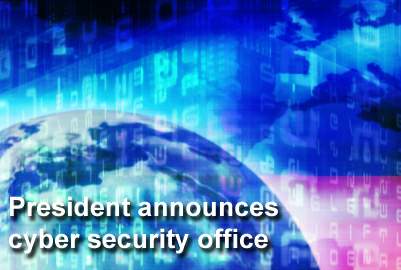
President announces cyber security office

President Barack Obama has announced he will appoint a cyber security coordinator to oversee the nation's computer network infrastructure.